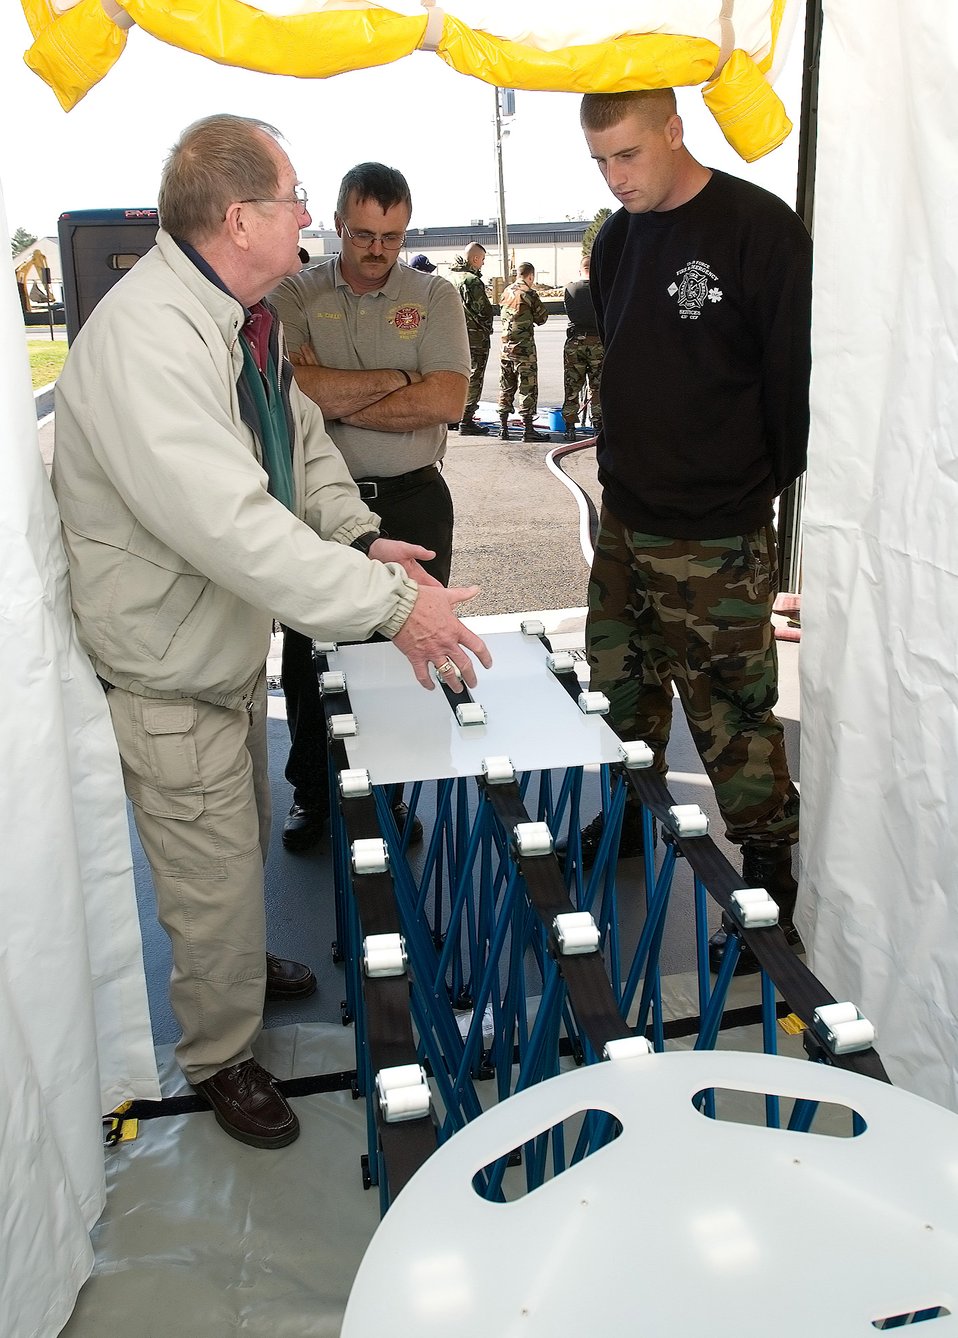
JPM Guardian helps protect warfighter

Jim Kolch explains the procedures for decontaminating non-ambulatory people to Brian Cullen and Senior Airman Kyle O'Conner during a training class Nov. 2 at Dover Air Force Base, Del. Mr. Kolch is an EAI Corporation counterterrorism with weapons of mass destruction subject matter expert assigned to the Installation Protection Program Lite. Mr. Cullen works in the 436th Civil Engineer Squadron Battalion chief of Special Operations and Airman O'Conner is a 436th CES firefighter at Dover AFB.